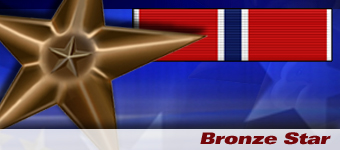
Bronze Star Medal heritage spotlight graphic .